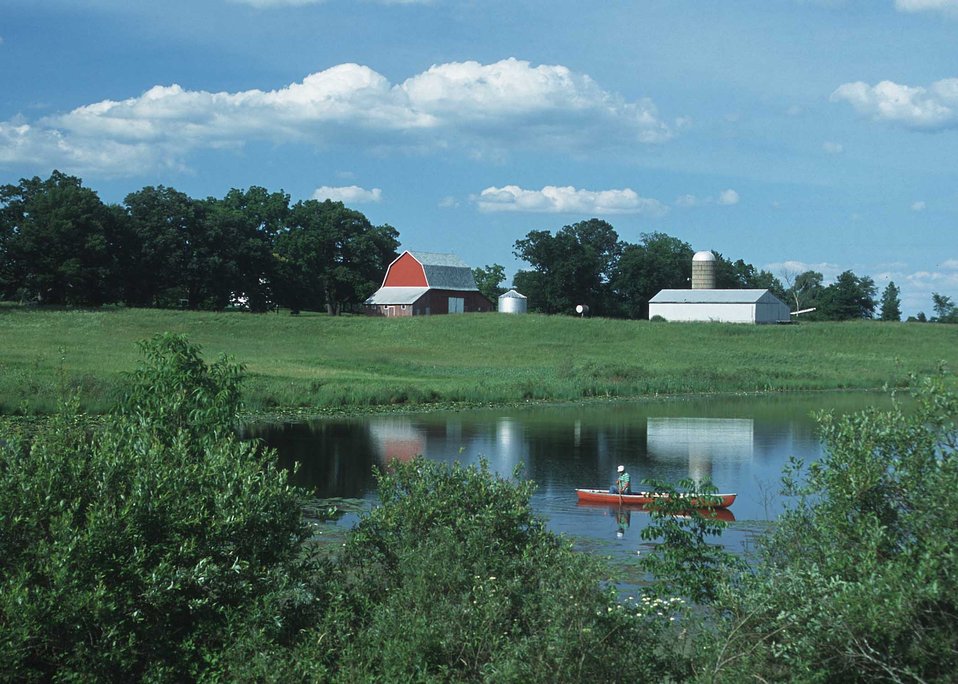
Red canoe with fisherman on a pond with a red barn in background. Montcalm County, Michigan.